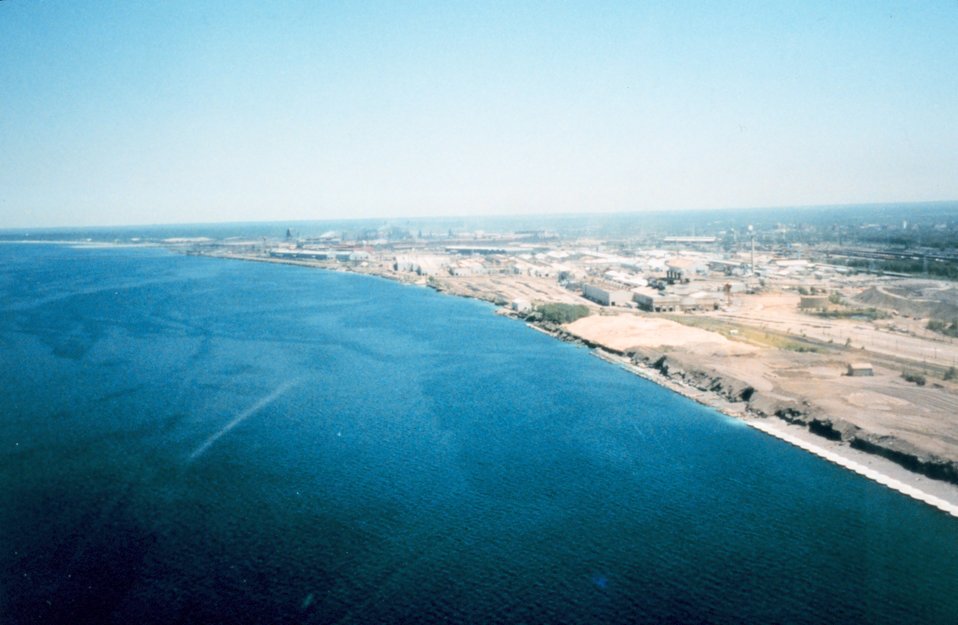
Looking east